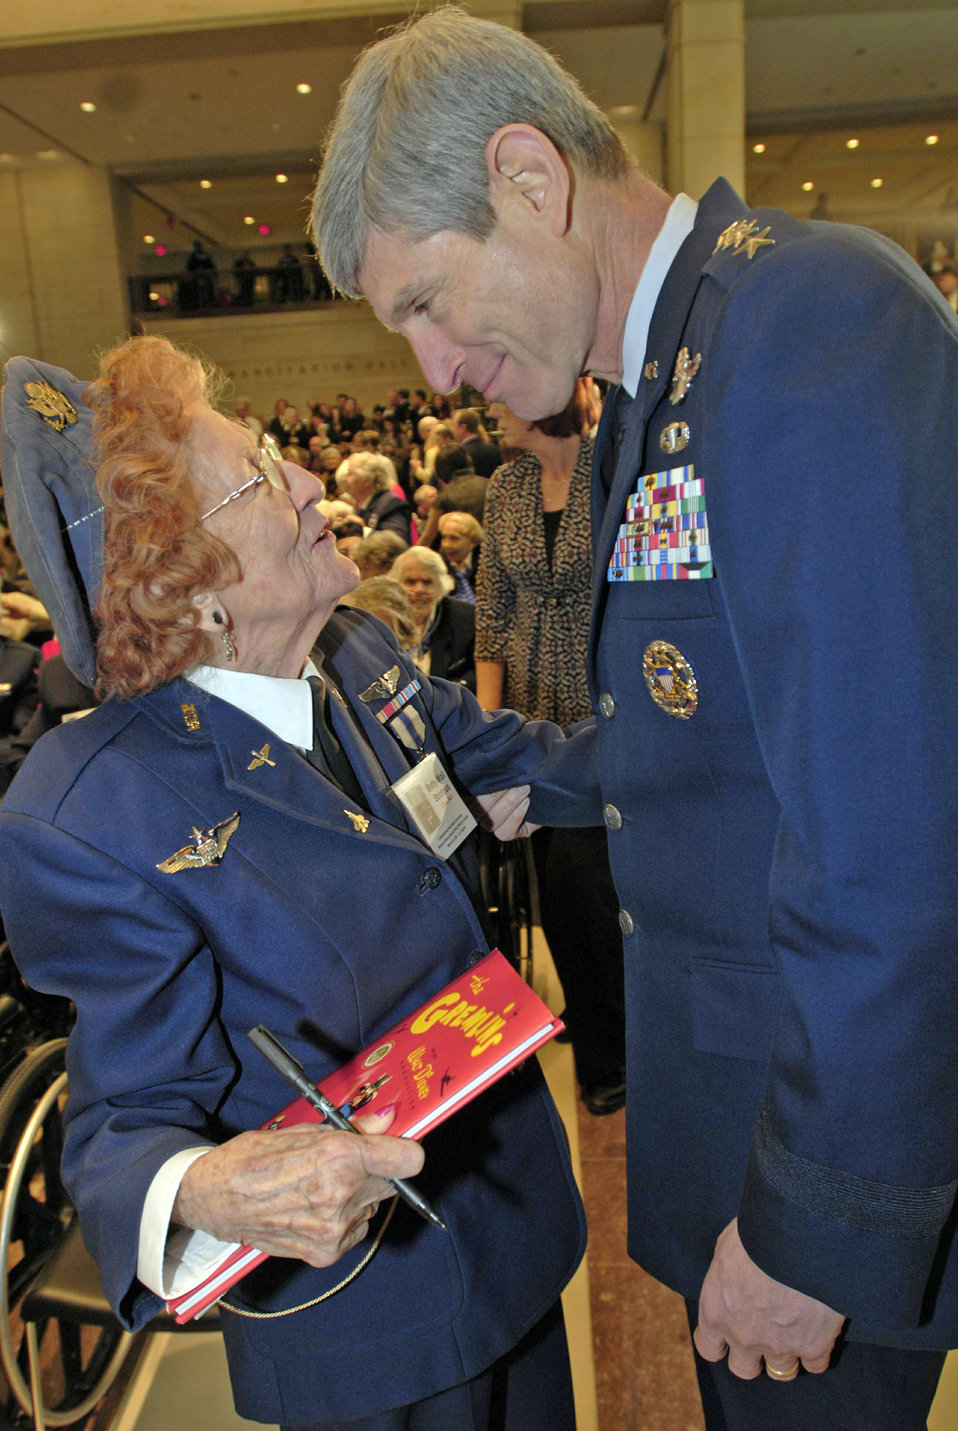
WASPs awarded Congressional Gold Medal

Betty Wall Strohfus, a Women Airforce Service Pilot from Minnesota, talks with Air Force Chief of Staff Gen. Norton Schwartz at the Congressional Gold Medal ceremony at the Capitol March 10, 2010. More than 200 WASPs attended the event, many of them wearing their World War II-era uniforms. The audience, which Speaker Nancy Pelosi noted was one of the largest ever in the Capitol and too large to fit into Emancipation Hall, also included their families, as well as the families of those who have since died or couldn't travel.